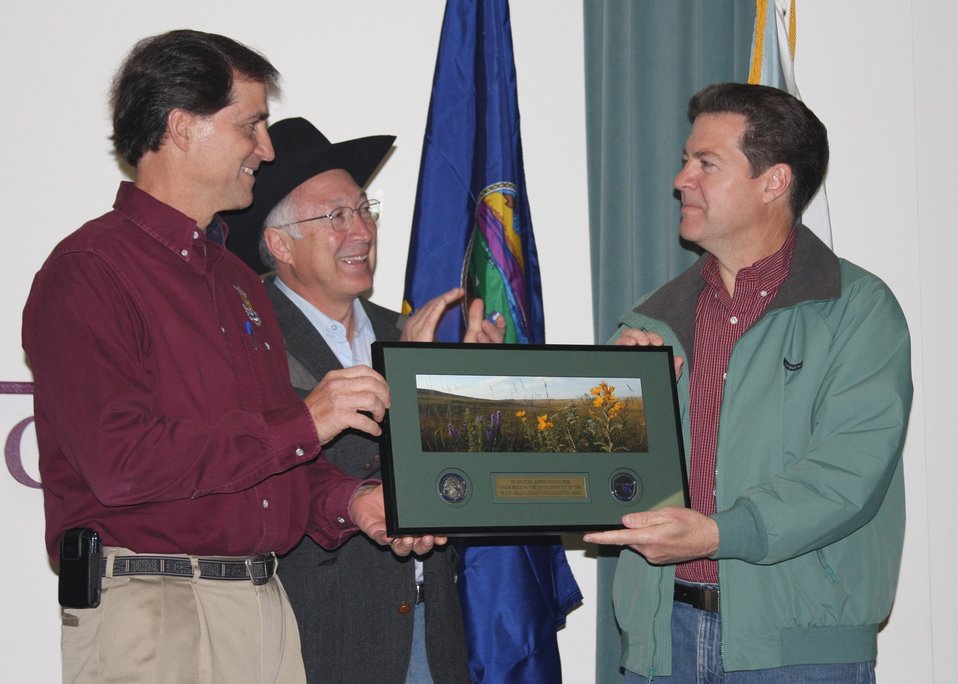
Award Ceromony

From left to right: U.S. Fish and Wildlife Service Director Dan Ashe, Secretary of the Interior Ken Salazar, and Kansas Governor-elect Sam Brownbeck.